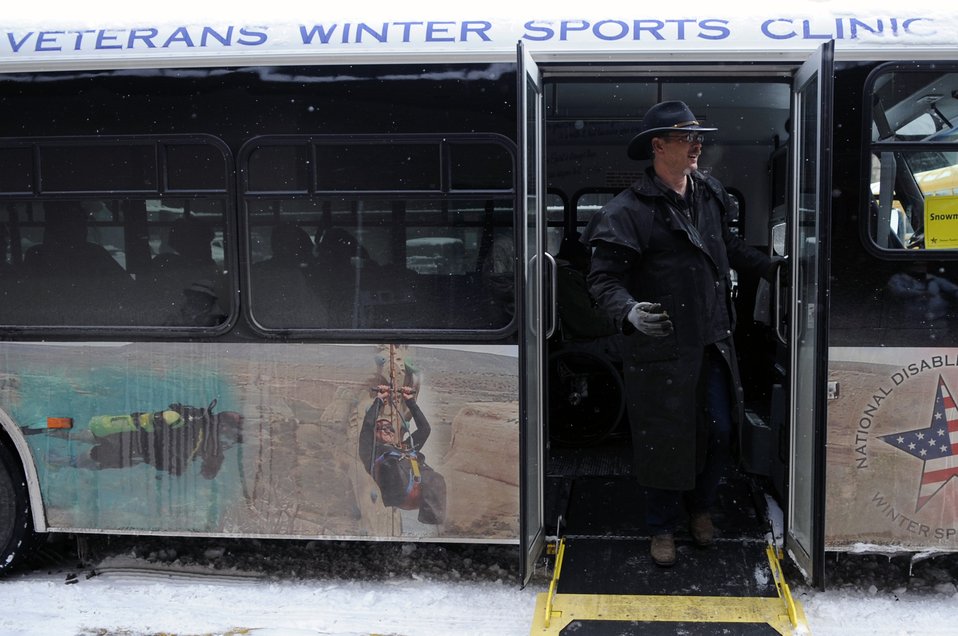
23rd National Disabled American Veterans Winter Sports Clinic

Tech. Sgt. Richard Layton looks for veterans needing a ride to the snowmobiling area Apr. 1 during the 23rd National Disabled American Veterans Winter Sports Clinic. Sergeant Layton has been volunteering five years for the sports clinic. He is assigned to Luke Air Force Base, Ariz.